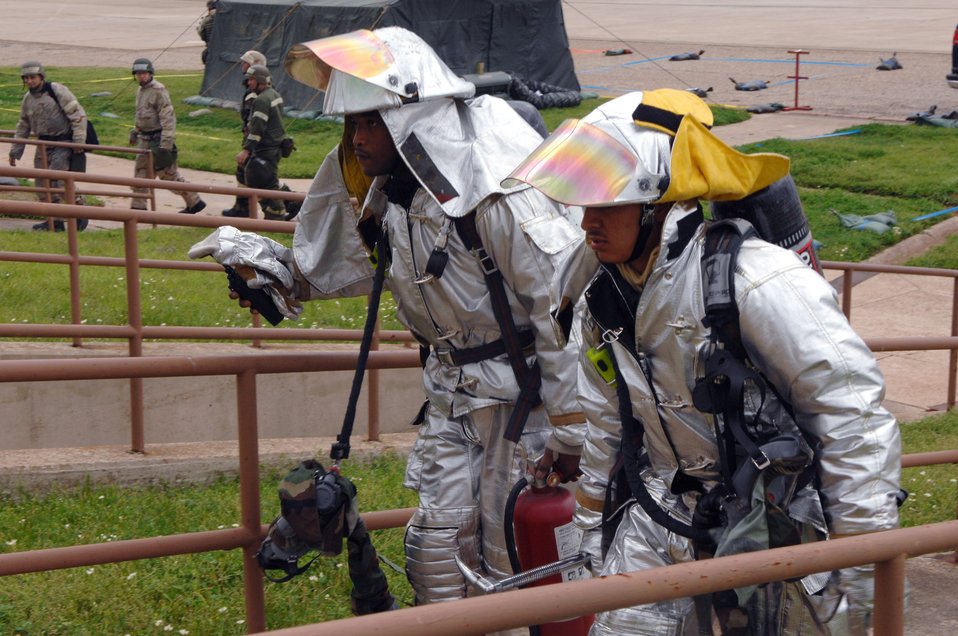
Global Cajun 07-2

Staff Sergeant Roderick Wiggins (left) and Airman Michael Ramos rush to put out a mock electrical fire as part of a Conventional Operational Readiness Exercise March 12 at Barksdale Air Force Base, La. The Airmen are working in support of Global Cajun 07-2.